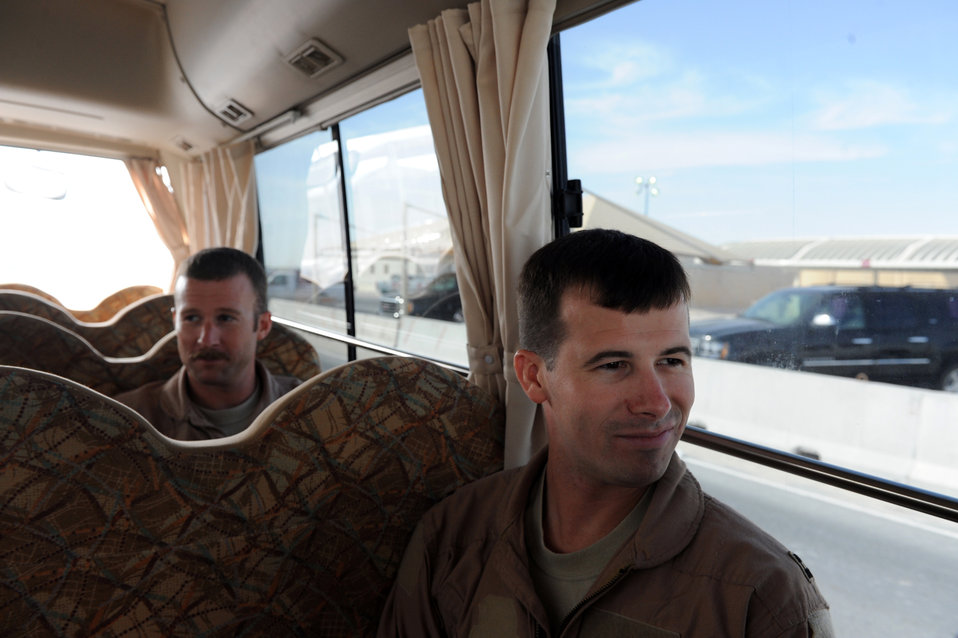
Operation Enduring Freedom

Capt. Conor Daugherty and Capt. Jason Wright ride a crew bus to their awaiting aircraft prior to the last mission of their six-month deployment Jan. 23, 2010, at an air base in Southwest Asia. Captain Daugherty is a B-1B Lancer defensive systems operator. Captain Wright is a B-1B pilot. Both are assigned to the 37th Expeditionary Bomb Squadron.